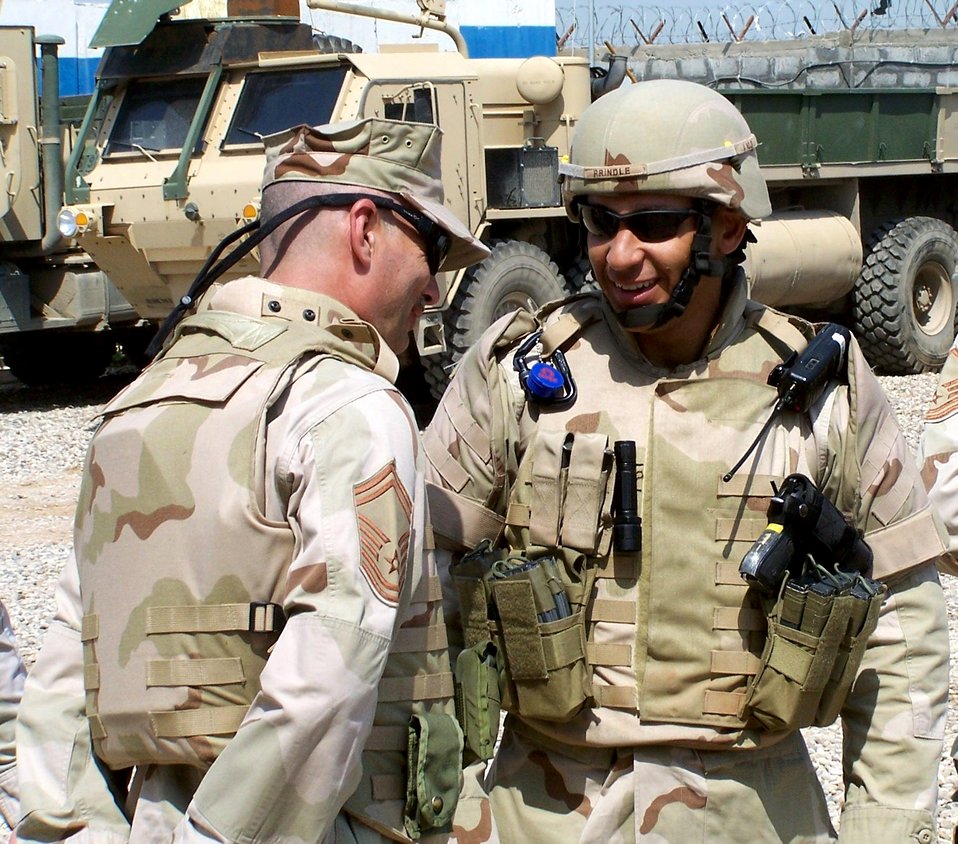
SF officer defends freedom

Maj. Jeffery Prindle (right) and Senior Master Sgt. Edward Bock discuss a convoy mission prior to heading out. Major Prindle is the commander of the 732nd Expeditionary Security Forces Squadron, Detachment 6 in Mosul, Iraq deployed from the 315th Security Forces Squadron at Charleston Air Force Base, S.C. Sergeant Bock is an Air National Guard member from the 185th Airlift Wing, Iowa.